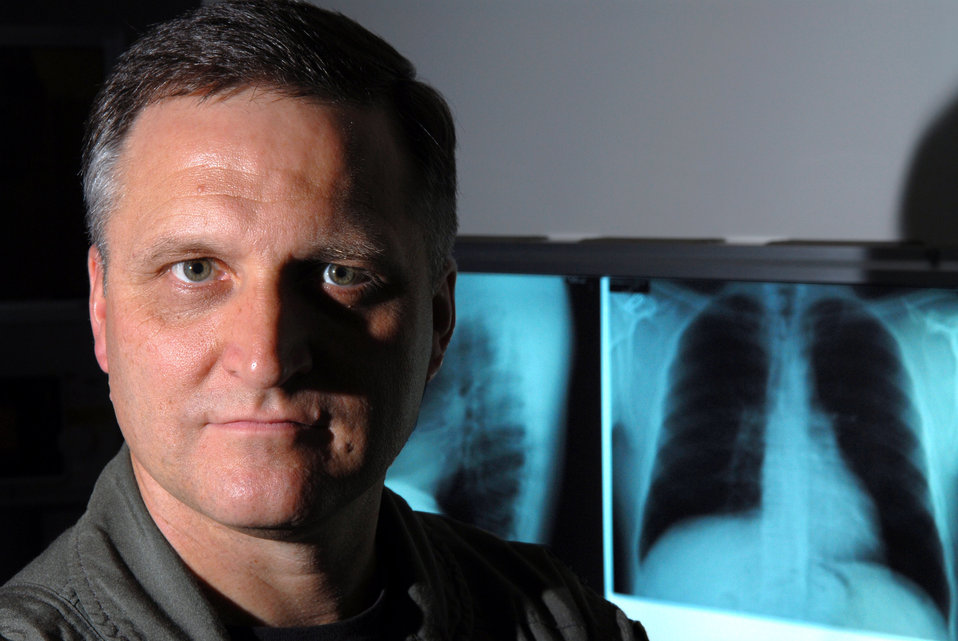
Kadena Airman donates bone marrow

Lt. Col. Joseph Coogan recently donated his bone marrow in an effort to save someone's life. While the recipient is unknown, Colonel Coogan said he is pleased he could help out. Colonel Coogan is assigned to the 18th Wing Safety Office at Kadena Air Base, Japan.